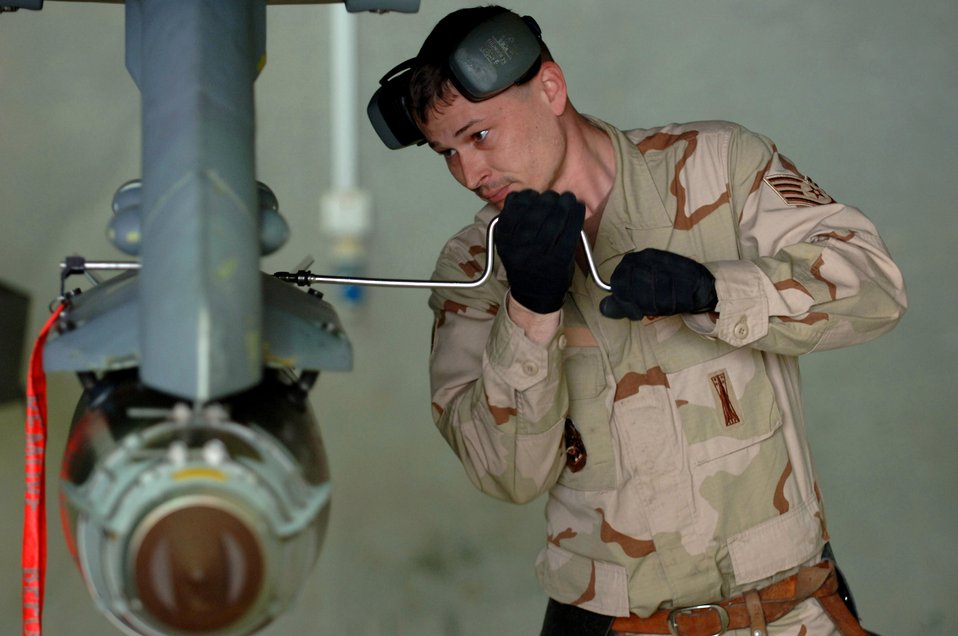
CENTAF Airpower Summary for March 22, 2007

Staff Sgt. Steven Socia uses a speed wrench to secure a joint direct attack munition to an F-16 Fighting Falcon Feb. 7 at Balad Air Base, Iraq. Sergeant Socia is a weapons loader assigned to the 332nd Expeditionary Aircraft Maintenance Squadron.